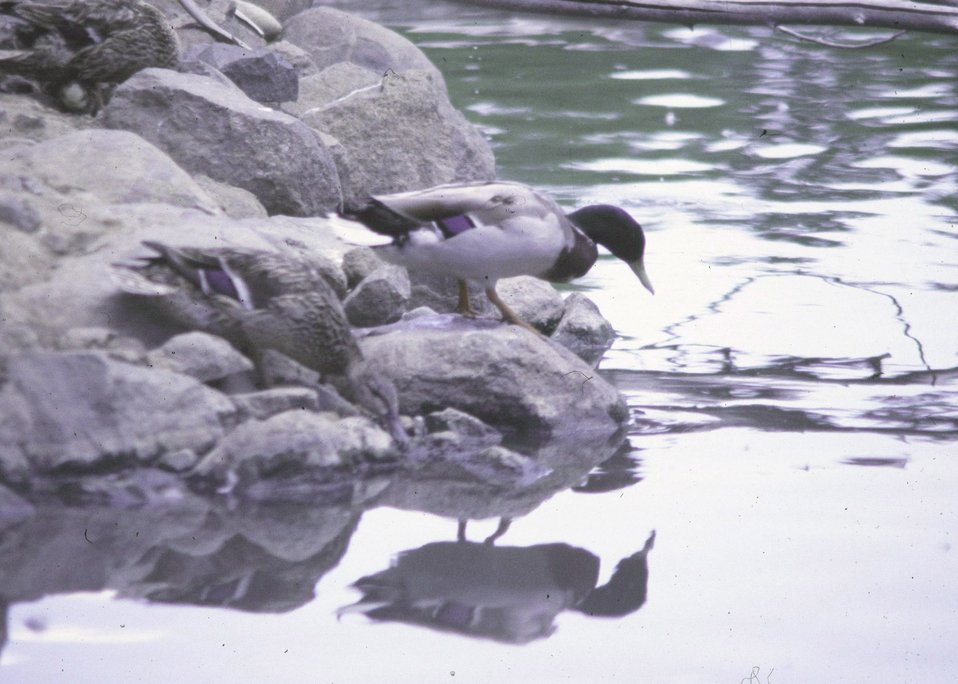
A mallard duck looking into a pond with reflection.